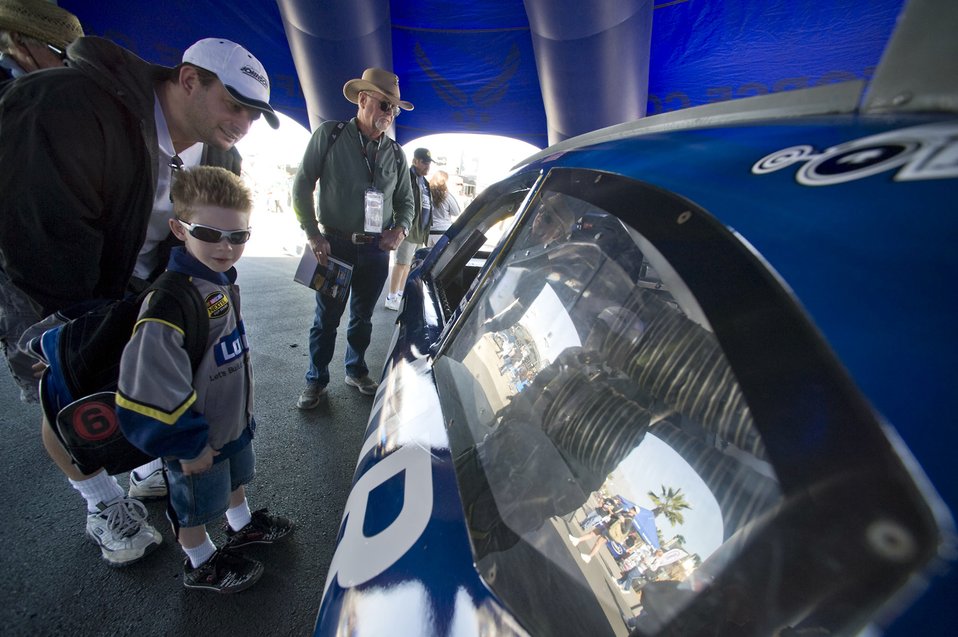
Air Force teams with NASCAR to aid recruiting

Race fans view the new Air Force sponsored No. 43 Dodge Feb. 28 at the Las Vegas Motor Speedway in Nevada. The Air Force paint scheme will be on the track in 2009 at Dover International Speedway, Del., Talledega Superspeedway, Ala., Daytona International Speedway, Fla., and Lowes Motor Speedway in Charlotte, N.C.